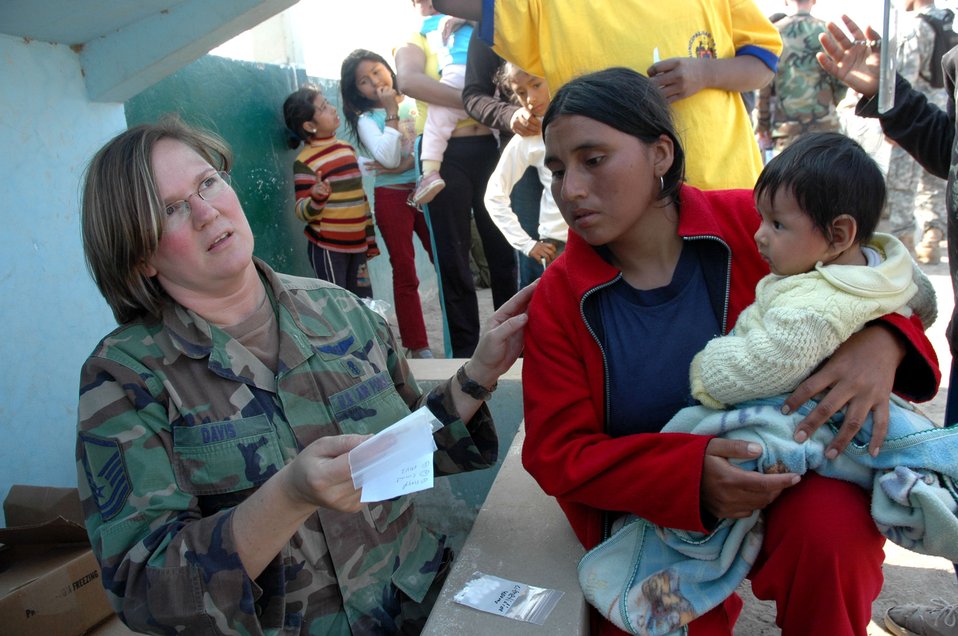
Task force treats more than 500 Peruvian patients

Master Sgt. Deborah Davis explains a prescription to a patient at the medical site established by Joint Task Force-Bravo members in Pisco, Peru, Aug. 18. At the site, medical personnel provide basic medical care and medicines to those suffering following the 8.0 magnitude earthquake that devastated the region Aug. 15. The medical team treated more than 500 people during the first two days of the mission. Sergeant Davis is the NCO in charge of the JTF-B humanitarian mission.